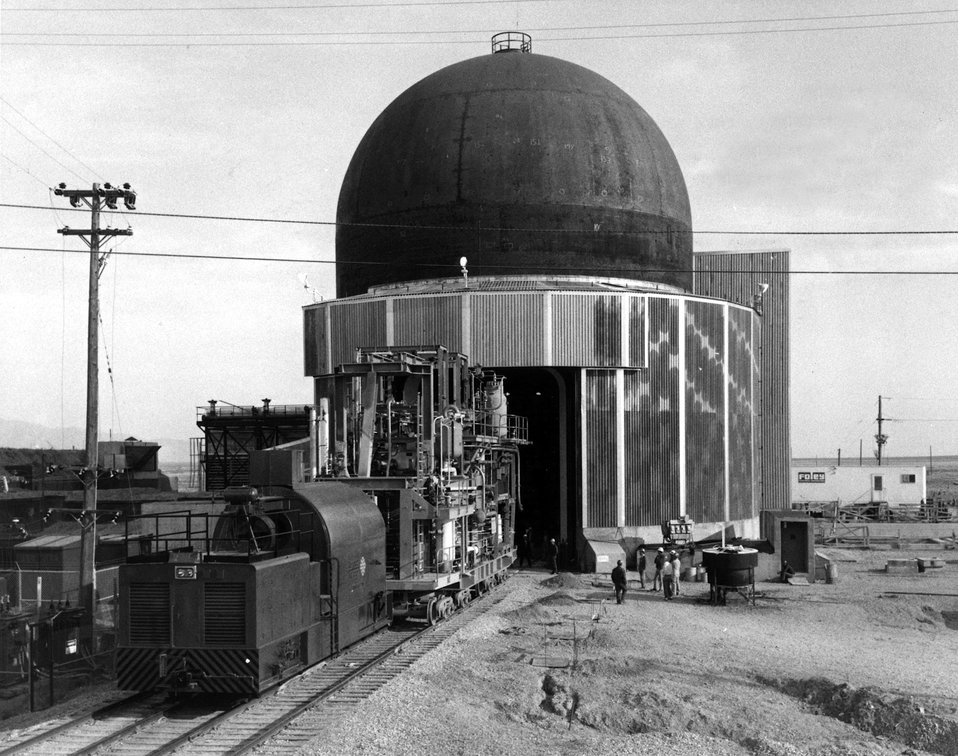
NRTS, Idaho... The LOFT (Loss of Fluid Test) Mobile Test Assembly (MTA) en-route to the LOFT containment building on November 2, 1973 at the U.S. Atomic Energy Commission National Reactor Testing Station in Idaho. Circa 1974.